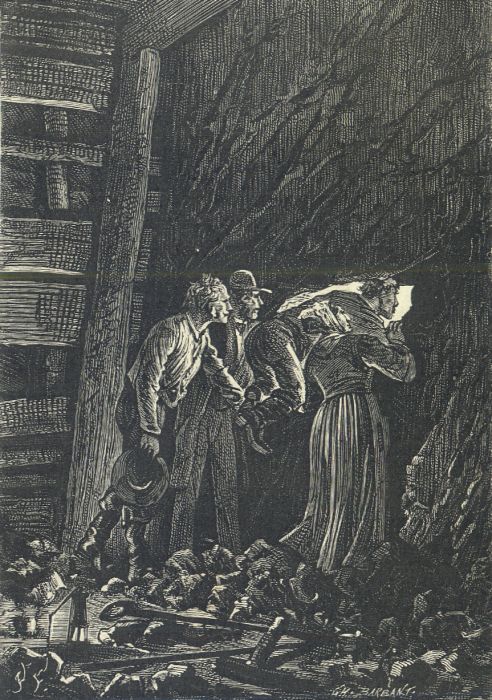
An illustration from the novel 'The Child of the Cavern' (alternative English titles for this novel include: Black Diamonds, Black Indies, Child of the Cavern, or Strange Doings Underground and The Underground City) by Jules Verne drawn by Jules Férat. Polski: Ilustracja powieści Juliusza Verne'a 'Czarne Indie' autorstwa Julesa Férata. Français : 'Les Indes noires', Jules Férat. Orginal description from the book: Français : Harry s’y introduisit sans hésiter.